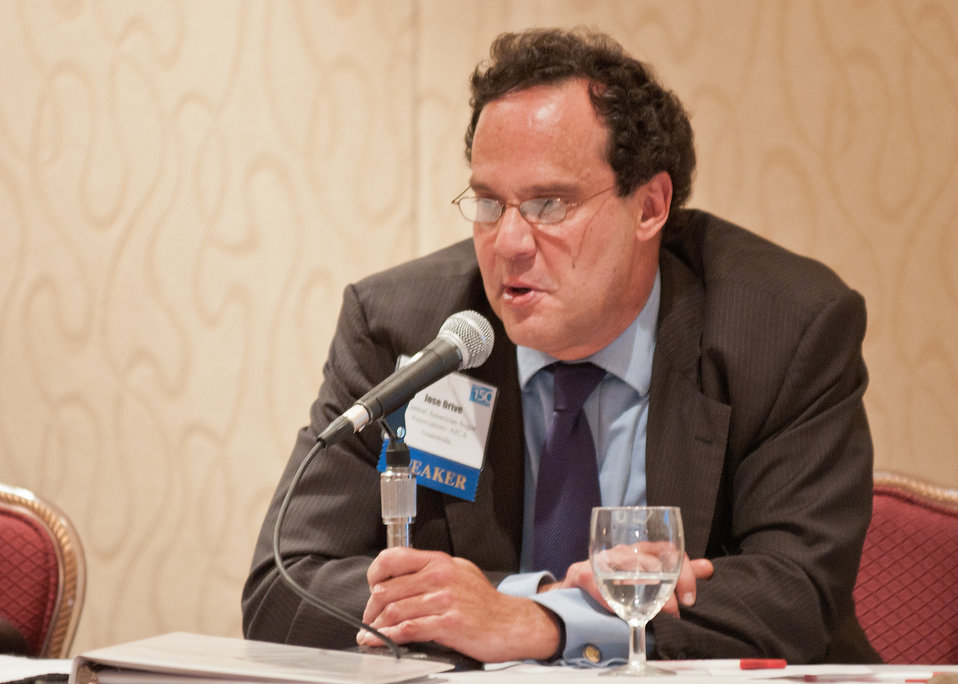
Jose Orive (left), Executive Director, Association of Azucareros Central American (AICA) or Central American Sugar Association, Guatemala spoke at the Sugar Trade in Central and North America commodity luncheon at the 2012 Agricultural Outlook Forum, “Moving Agriculture Forward, Growing, Innovating and Celebrating 150 Years” held at the Crystal gateway Marriott Hotel Arlington, Virginia, Friday, February 24, 2012. This year’s forum coincides with the 150th anniversary of the Department of Agriculture addressing economics, marketing, research, food safety, nutrition, conservation, rural development, alternative energy, trade and many other agricultural issues.